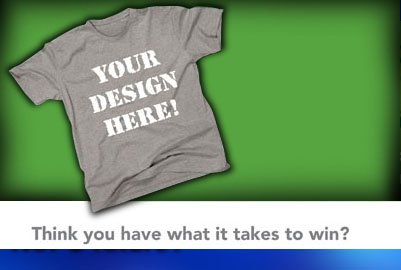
YOAFF T-shirt contest

The Air Force Services Agency is promoting a T-shirt design competition on the recently launched myairforcelife.com, now through Dec. 20, as part of the Year of the Air Force Family.